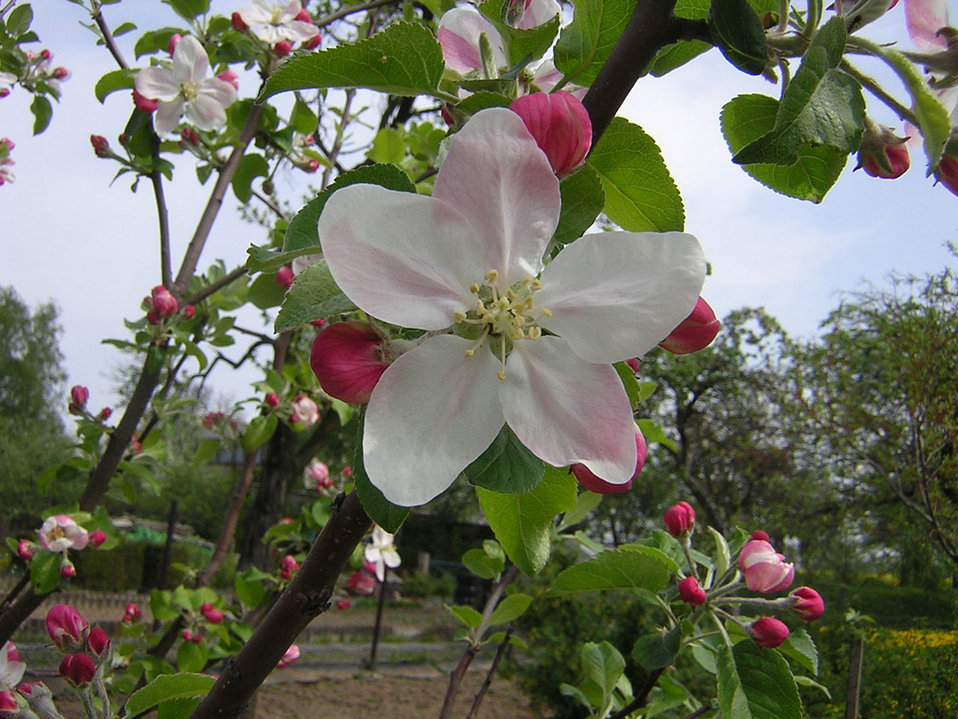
Apple blossom

Apple tree in blossom.